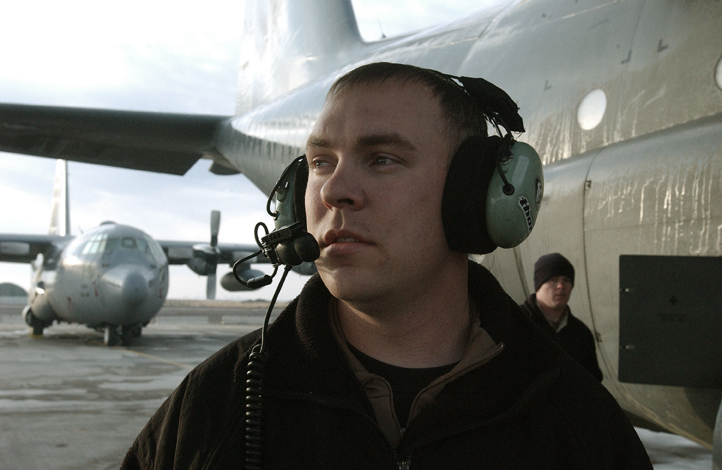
Maintainers make 'maintenance magic'

KARSHI-KHANABAD AIR BASE, Uzbekistan -- Senior Airman Wheldon Thorpe supervises an aircraft refueling. Airman Thorpe and other maintainers from the 774th Expeditionary Airlift Squadron maintenance flight have helped the squadron maintain a 100 percent mission accomplishment rate for the past four months.